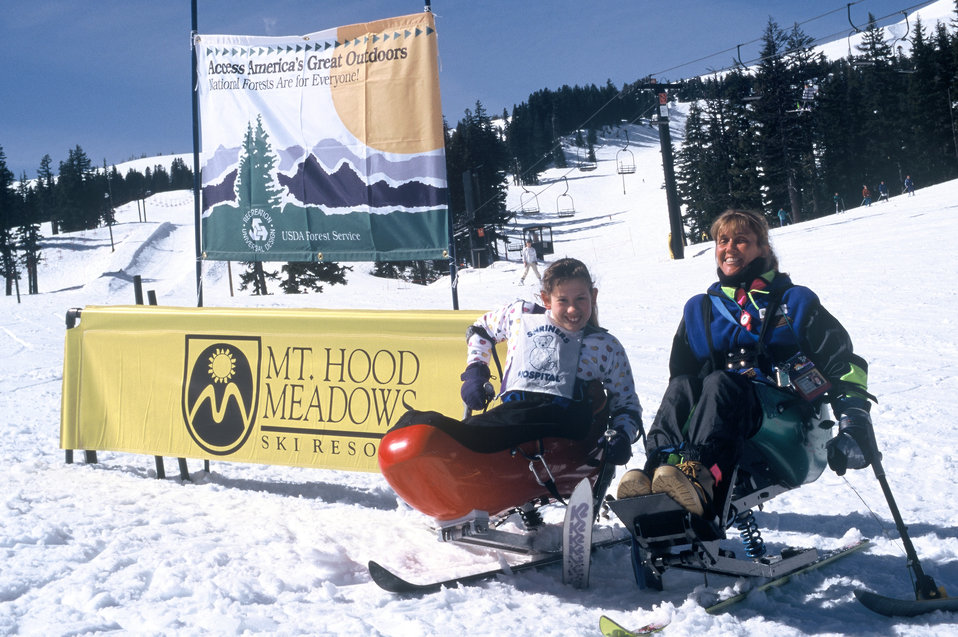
Disabled skier and ski instructor at ski race held on Mt. Hood National Forest near Portland, Oregon in January 1996.